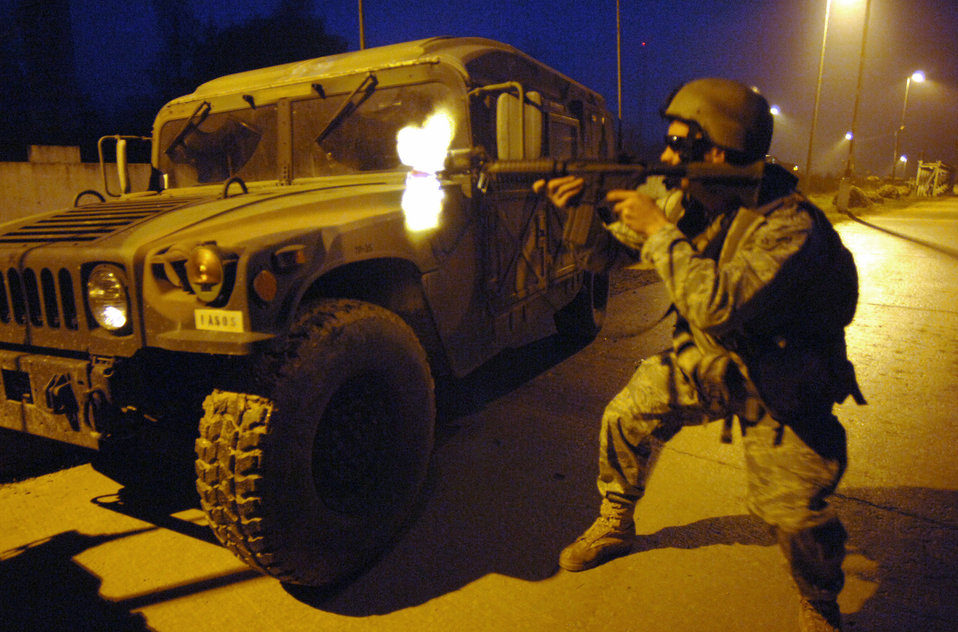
Forward air controllers prepare for war

Airman Bryan Cravill provides cover fire for Soldiers and Airmen escaping